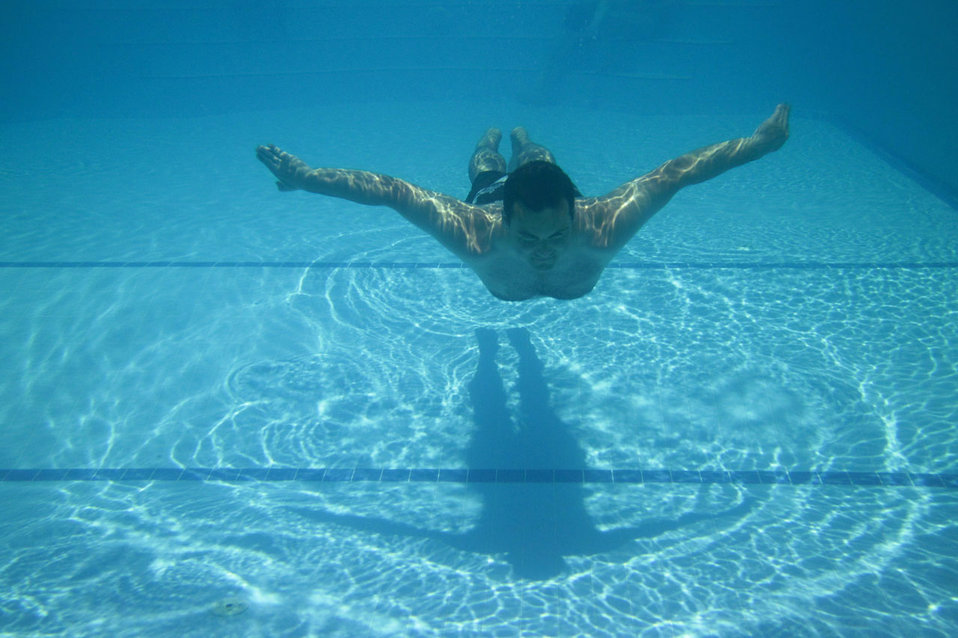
Man swimming in pool

Young man swimming in the pool underwater.